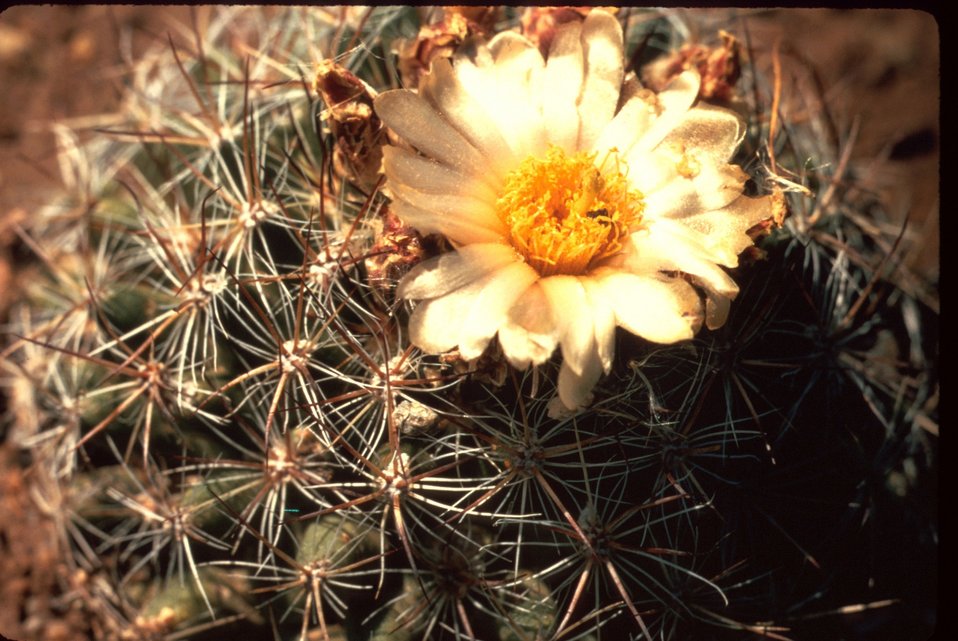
Coryphantha missouriensis barrel cactus near MacKay, Idaho, Challis field office Wildflower